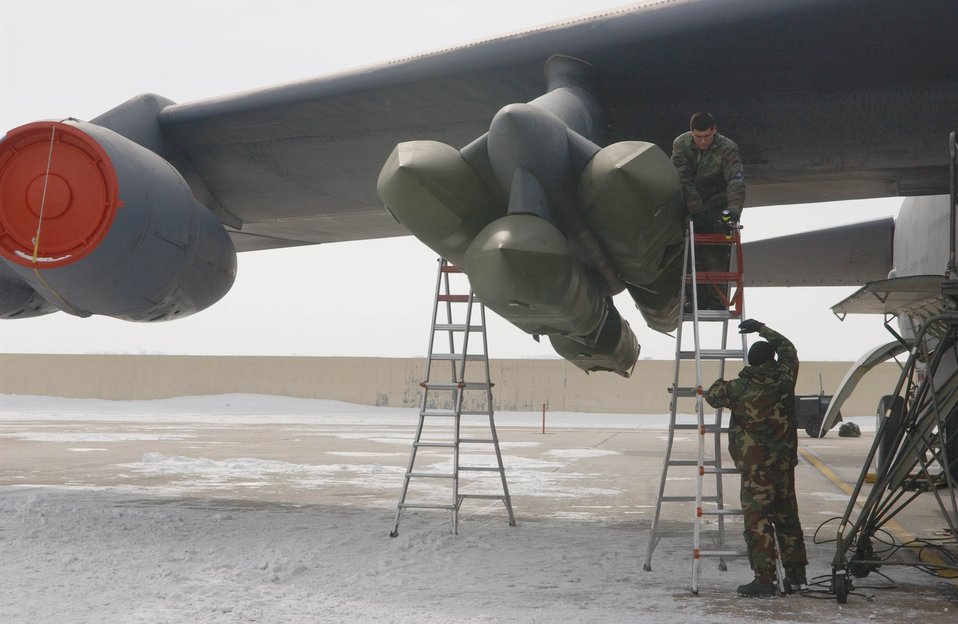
B-52 generation

Airmen secure a cruise missile to a B-52 Stratofortress pylon during an alert generation exercise at Minot Air Force Base, Tuesday, Feb. 28, 2006. The exercise tested cruise missile loading and aircrew response procedures.